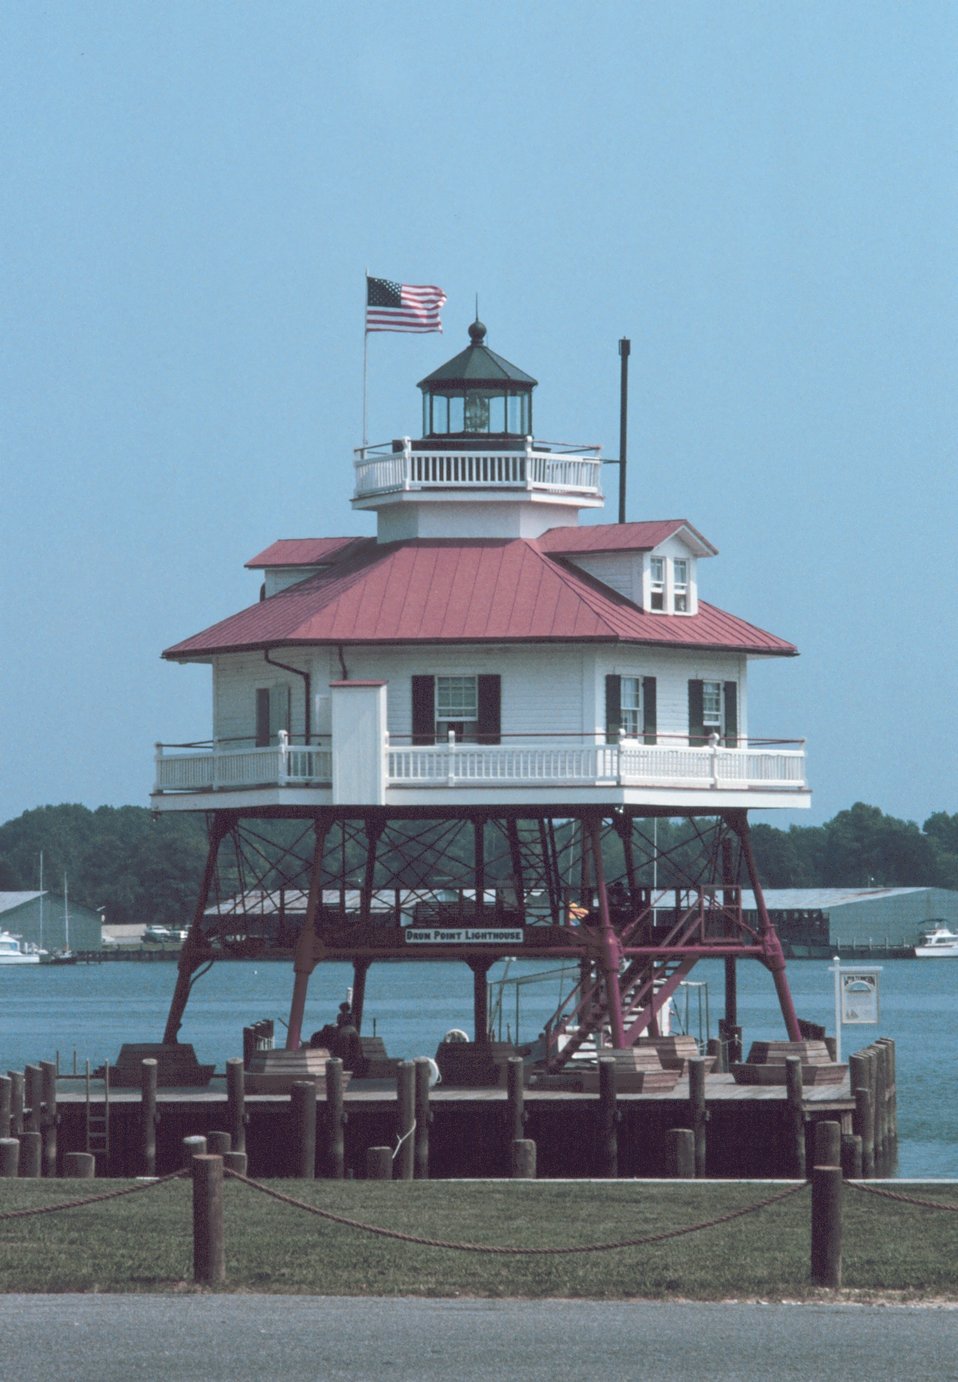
Drum Point Lighthouse, now a museum, stood watch at the mouth of the Patuxent River.